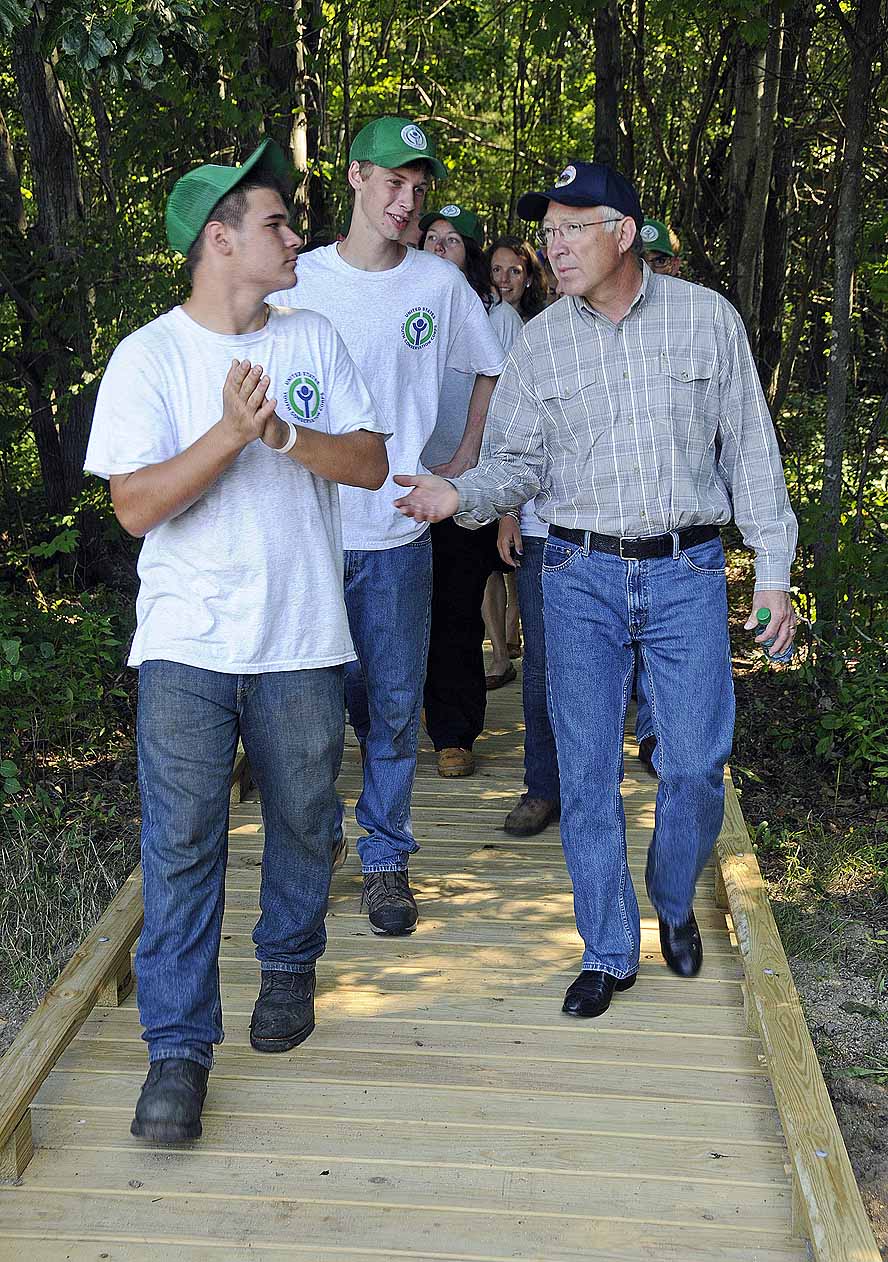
Secretary Salazar visit to Great Bay

Secretary of the Interior Ken Salazar talks with members of the Youth Conservation Corps as they walk the new Upper Peverly Pond Trail boardwalk at Great Bay National Wildlife Refuge. The YCC crew built the boardwalk over the last three summers. Visit occurred on August 19, 2011.